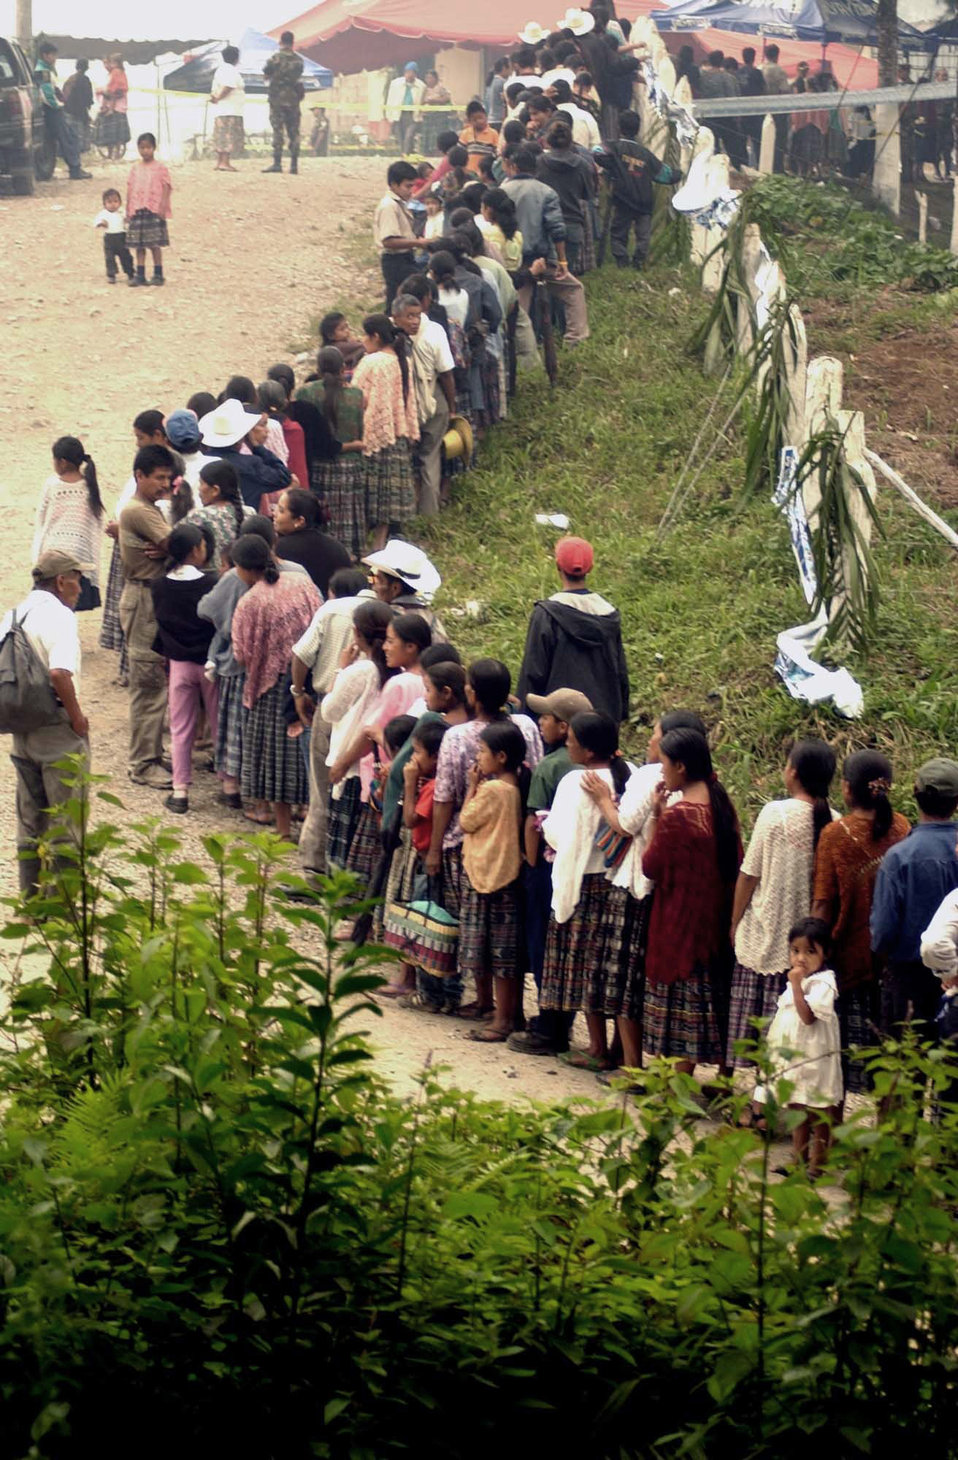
Airmen travel to Guatemala to train, treat patients

GUATEMALA -- Guatemalans stand in long lines to receive medical attention during a 10-day visit by Air Force Reserve Command medical teams deployed here for a medical readiness training exercise. Medics treated nearly 1,000 people a day during the deployment.